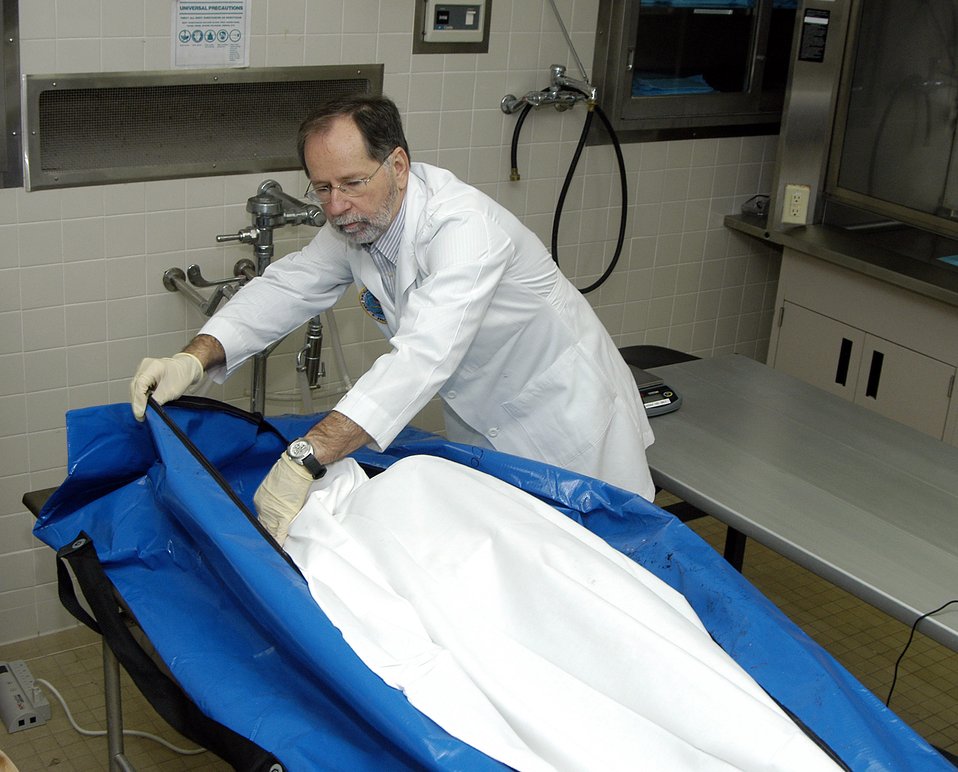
Frozen Airman

HICKAM AIR FORCE BASE, Hawaii (AFPN) -- Dr. Robert Mann begins identifying an Airman whose remains were found Oct. 16 on Mount Mendel in Kings Canyon National Park, Calif. The unidentified Airman arrived at JPAC Oct. 24 still wearing a World War II-era parachute, with a comb, various coins and other personal effects in his pockets. Investigators at JPAC searched the records of men lost during World War II and found that between 25 and 30 military planes crashed on training missions in California during these years. They have narrowed the list of possible Airmen to four who disappeared during a training mission on Nov. 18, 1942. Dr. Mann is the Joint POW/MIA Accounting Command deputy scientific director.